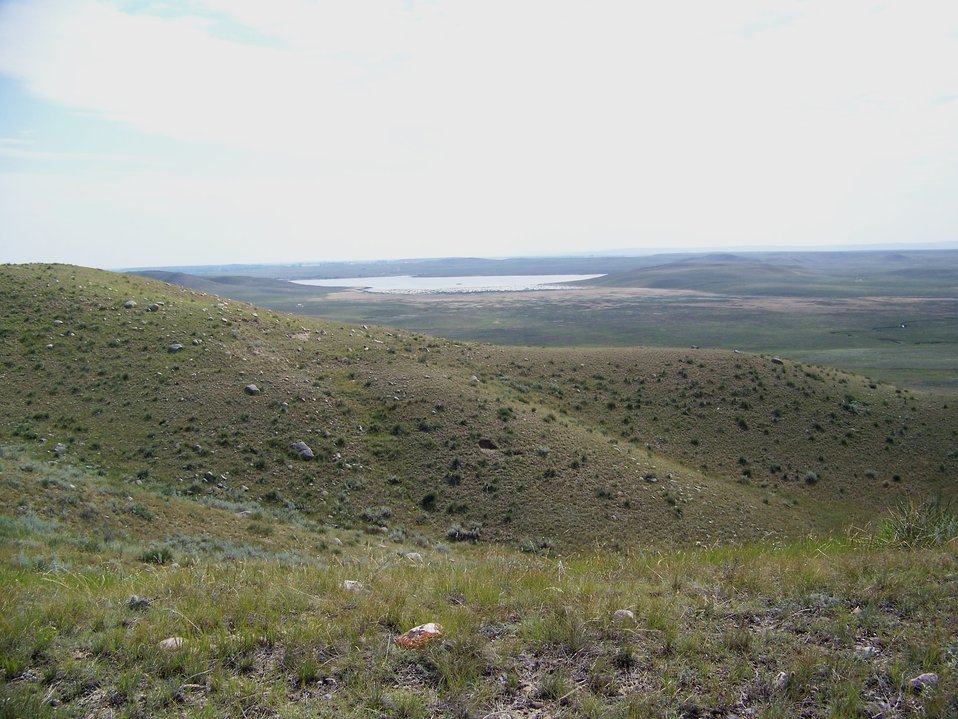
Open Prairie on Hewitt Lake NWR

Hilltop view of Hewitt Lake NWR